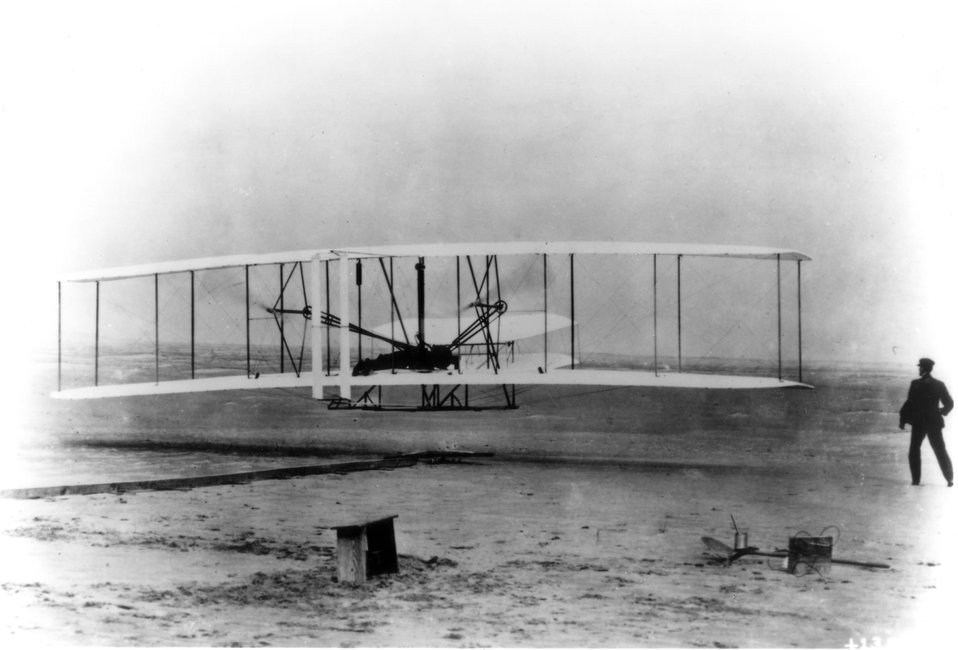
First Flight

EARLY YEARS -- KITTY HAWK, NC -- First flight, Dec. 17, 1903. Distance, 120 feet. Time, 12 seconds. Orville Wright at controls.